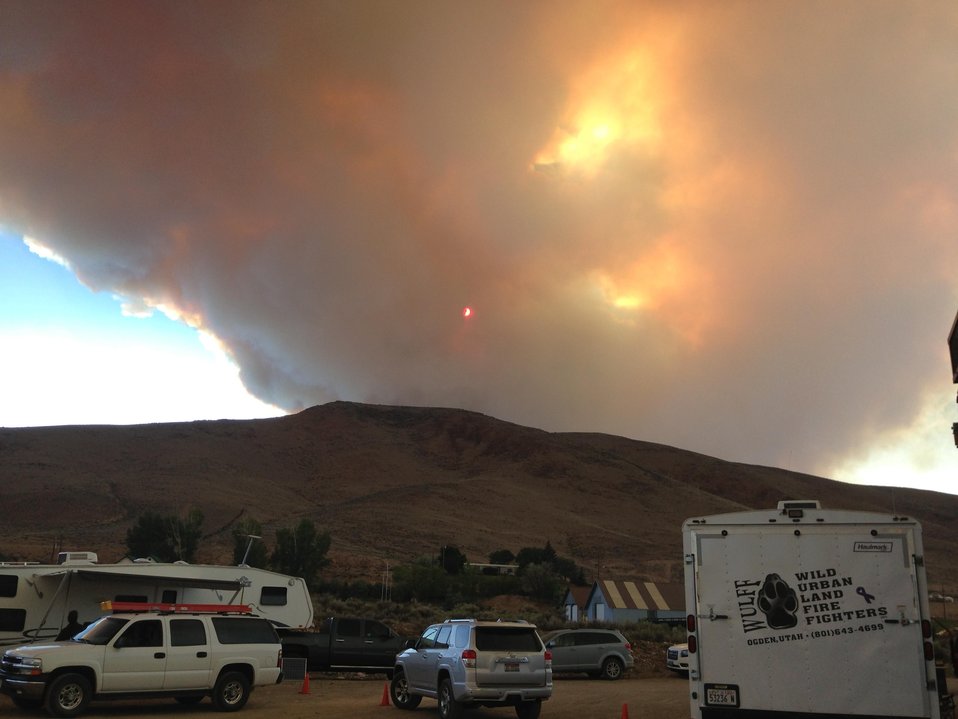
The Lodgepole Fire in the Salmon-Challis National Forest near Challis, ID began on Jul. 20, 2013 by lightning has consumed approximately 13,700 acres and is approximately 15% contained.